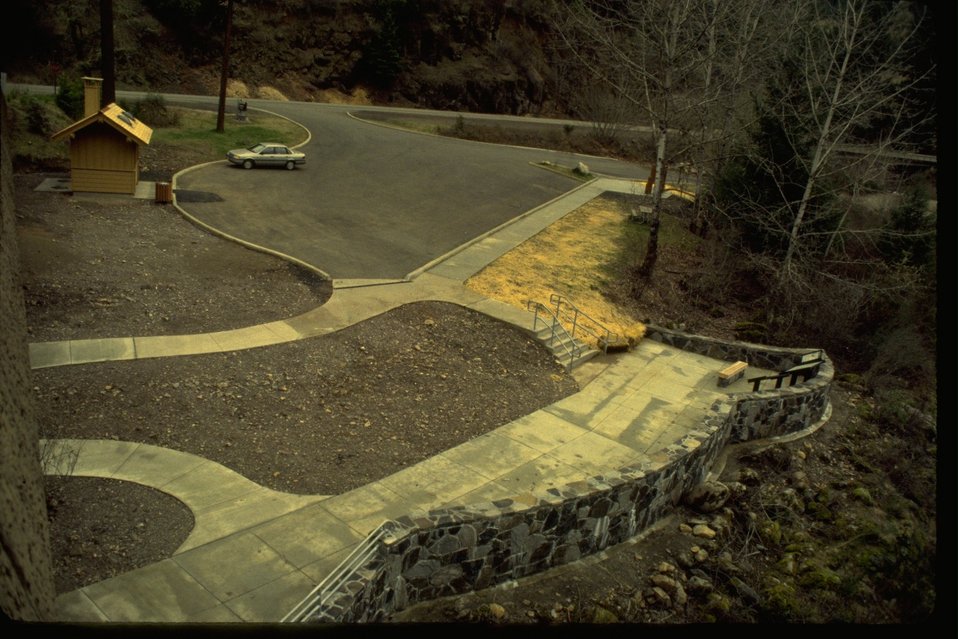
Wayside site near Swift Creek.